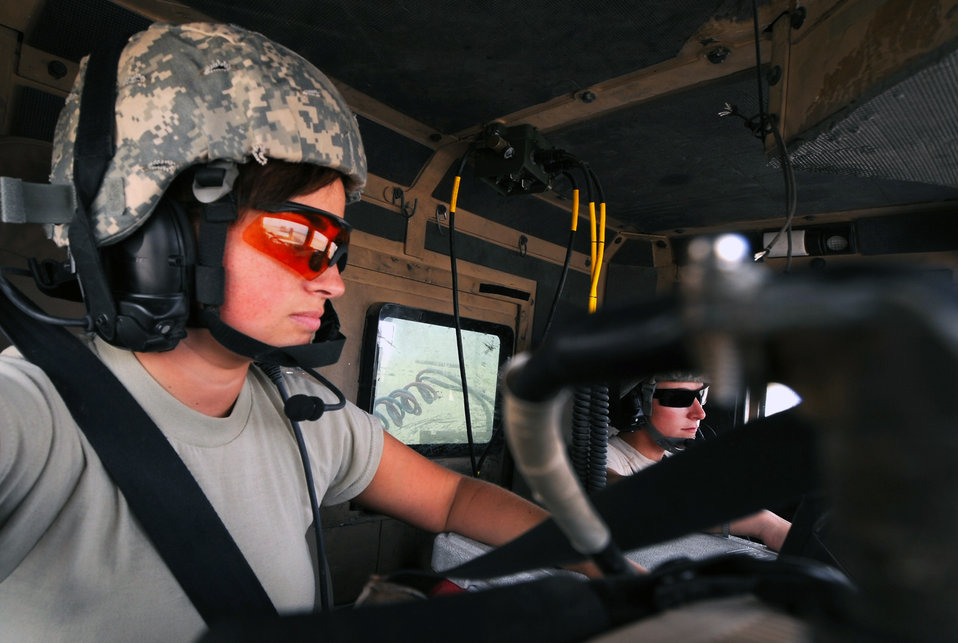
Convoy mission

Senior Airman Cynthia Spalding (left) and Senior Airman Kelly McLain wait for inspectors after strapping down their cargo before a local convoy mission in Southwest Asia. Every vehicle in a convoy must be inspected prior to departure. Airman Spalding is a photographer with the 386th Air Expeditionary Wing Public Affairs office. Airman McLain is a vehicle operator with the 387th Expeditionary Logistics Readiness Squadron.